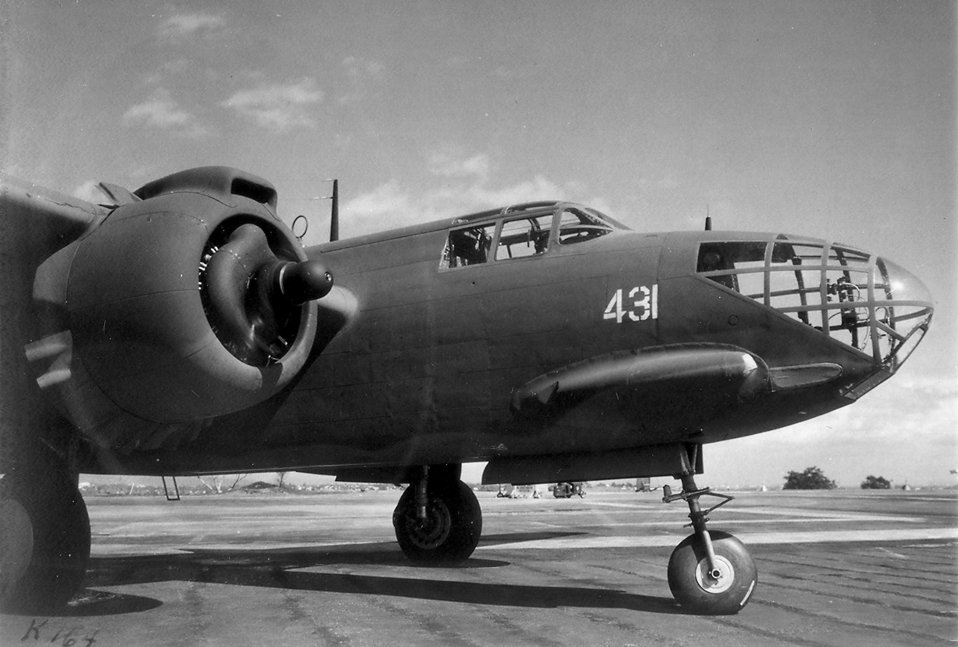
A-20

EARLY YEARS -- A-20